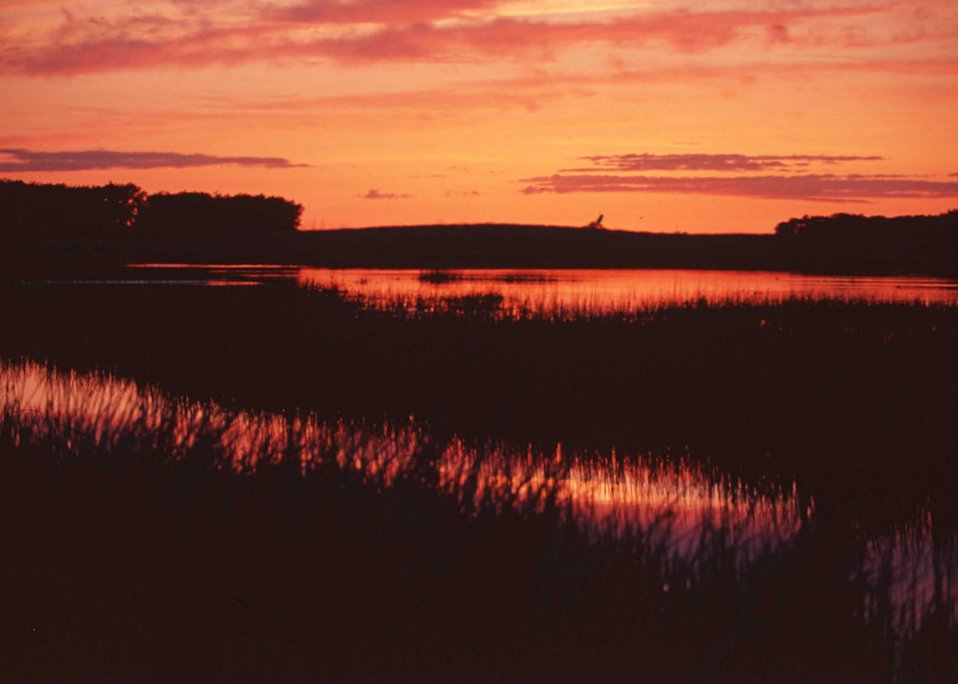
Sunset in the prairie pothole region of eastern South Dakota.